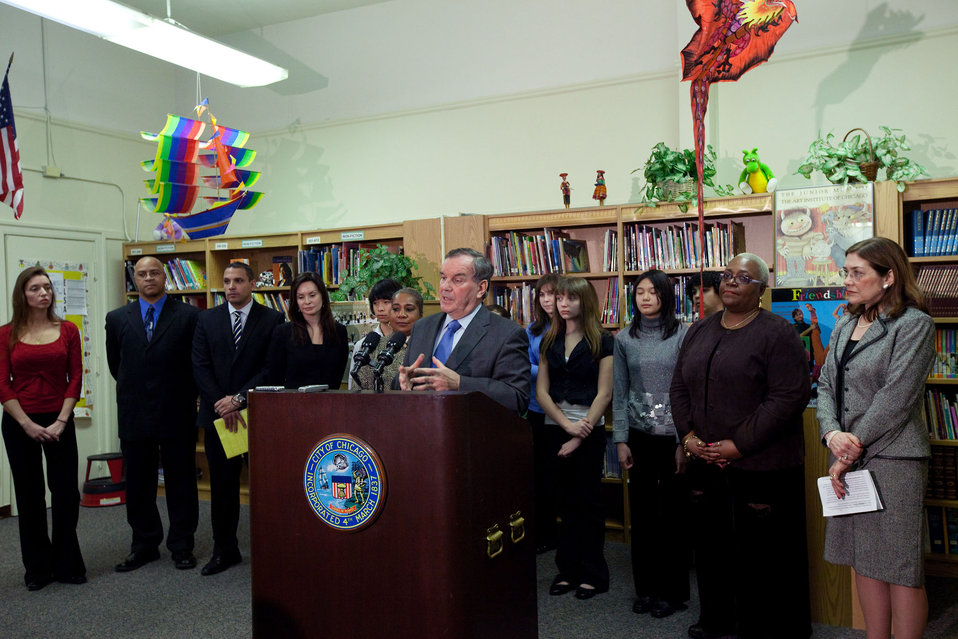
Rios in Chicago: 1/6/10

On January 6, 2010, Treasurer Rios was joined by Chicago Mayor Daley to discuss how the Build America Bonds program helped the Chicago Public Schools complete planned construction and improvement of public schools, while saving tens of millions of taxpayer dollars.